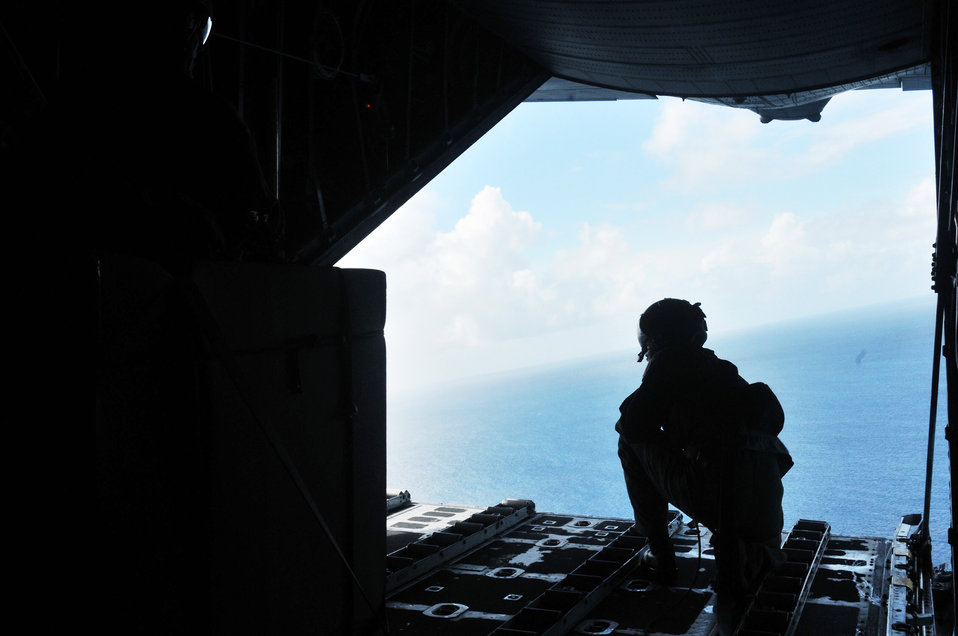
Airmen drop donated goods to islanders

Staff Sgt. Cravenkeo Khamone, a 36th Airlift Squadron loadmaster, spots the drop location for donated goods going to the Chuuk Islands Dec. 16, 2009, in support of Operation Christmas Drop.